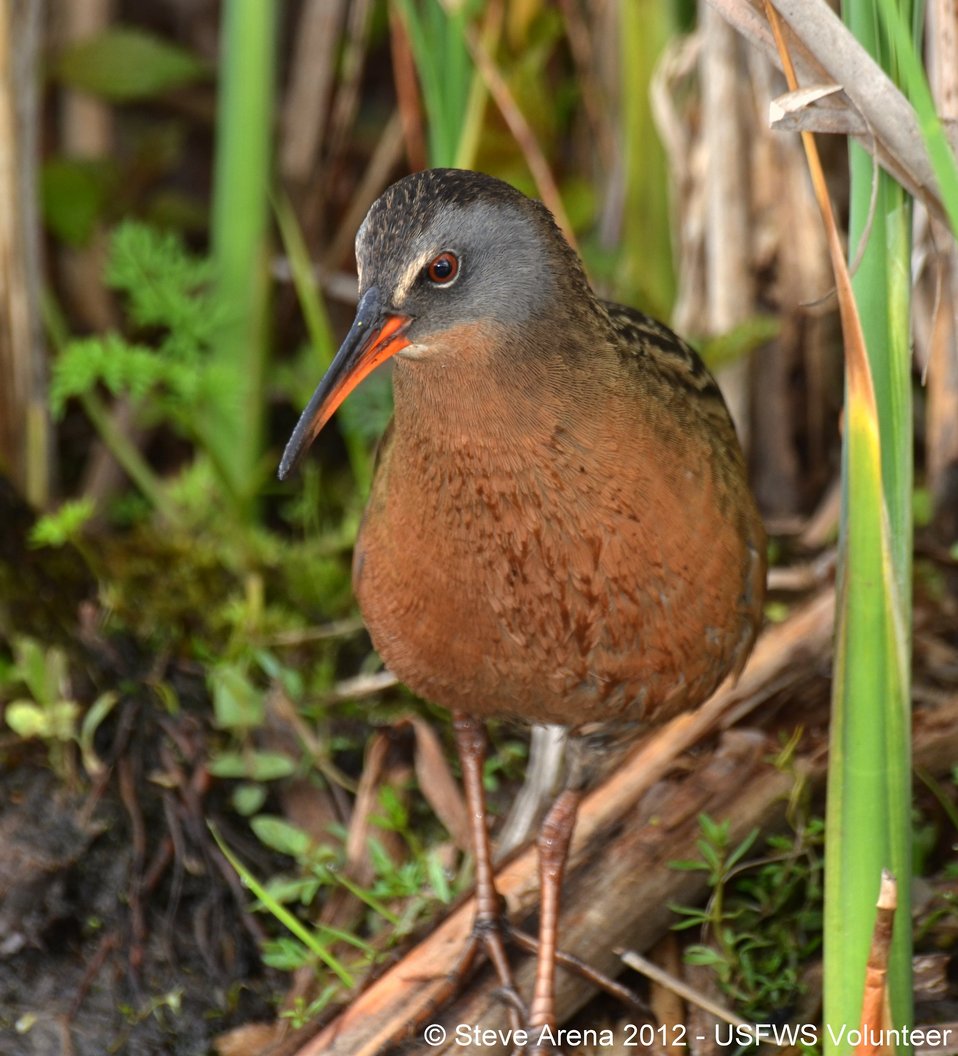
Virginia Rail (Rallus limicola) Upper Pool Marshbird Survey 06 May 2012

Virginia rail at Great Meadows National Wildlife Refuge.